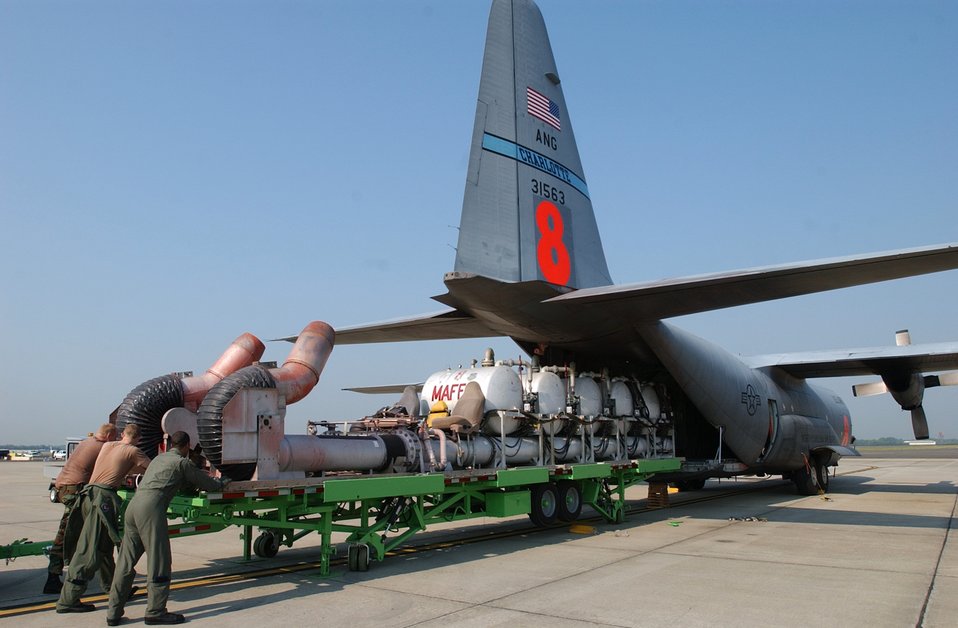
Modular Airborne Fire Fighting System

Airmen from the North Carolina Air National Guard's 145th Airlift Wing push a modular airborne fire fighting system onto a C-130 Hercules. The pressurized tanks hold 3,000 gallons of flame-retardant liquid. The retardant is dropped along the leading edge of a fire to block the spread of flames.